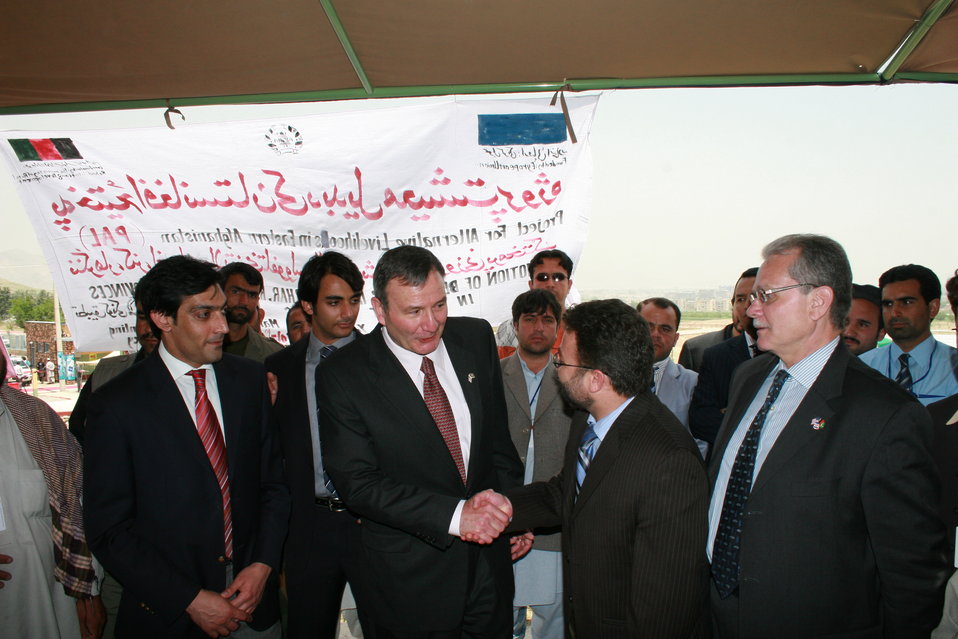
AgFair Acting Minister Kunduzi

On May 20, 2009, Ambassador Eikenberry joined government officials, farmers, agribusiness representatives, and international investors at the launch of the Kabul International AgFair on May 20. Held at the Ministry of Agriculture, Irrigation and Livestock’s Badam Bagh Demonstration Farm in Kabul, the fair showcases Afghanistan’s wealth of fresh produce, provides lucrative business opportunities, and demonstrates innovative agricultural technologies. It is expected to attract more than 50,000 participants from May 21-22.

U.S. Ambassador Karl Eikenberry and Afghan Acting Minister of Agriculture, Irrigation and Livestock (MAIL) Saleem Kunduzi gave opening remarks at the AgFair’s launch. “The United States Government is co-sponsoring national and regional AgFairs like this one to encourage trade and generate business opportunities in the agriculture sector,” Ambassador Eikenberry said. “In a country that is 80 percent rural, promoting licit crops and agriculture sector job creation are two essential steps to successful development in the region.”

Member of Parliament Abdul Salam Qazizada offered bold remarks, stating that we need to engage more with farmers in every province throughout the country.

Following the ceremony, Ambassador Eikenberry visited a number of vendors at the fair with Acting Minister Kunduzi and Mr. Qazizada. In speaking with farmers displaying their produce, Ambassador Eikenberry found that many have increased yields due to USAID assistance, have found regional buyers for their produce, and were grateful for the opportunities that AgFair provides.

Ambassador Eikenberry also discussed the state of agriculture with Minister Kunduzi and Mr. Qazizada. They agreed that while some progress has been made, there is a great deal more work to be done. Ambassador Eikenberry reiterated from his speech that USDA Secretary Vilsack recently met with Minister Rahimi to discuss the U.S. commitment to agriculture development. In a message to the Afghan public, Secretary Vilsack stressed that the USG aims to play a leading role by bringing more agriculture experts to the provinces and supporting agriculture research such as the Badam Bagh Demonstration Farm. Additionally, he looks “forward to working together to increase agricultural productivity, which will result in more jobs throughout the entire value chain, and a better quality of life for the citizens of Afghanistan.”

The United States Government is proud to support Afghan agriculture. Since 2002, America has provided more than 1 billion dollars in assistance to agriculture and rural development. AgFairs like the one Ambassador Eikenberry visited creates awareness of Afghanistan’s expanding agricultural sector, promotes new agricultural technologies that increase productivity, and provides a forum to connect farmers to local and international buyers. These results will contribute to Afghanistan’s prosperity.

We are already seeing the results of these fairs. Since 2007, Afghanistan’s agricultural fairs have attracted more than 500,000 participants from across the nation and the world, generated millions of dollars in sales of the country’s high-value produce, and provided participants with a competitive edge in one of the fastest growing markets in Central Asia.

As Ambassador Eikenberry stated, “The word is out – with over 180 international businesses represented at this fair, it is obvious that Afghanistan has sparked the interest, and appetite, of the world.”